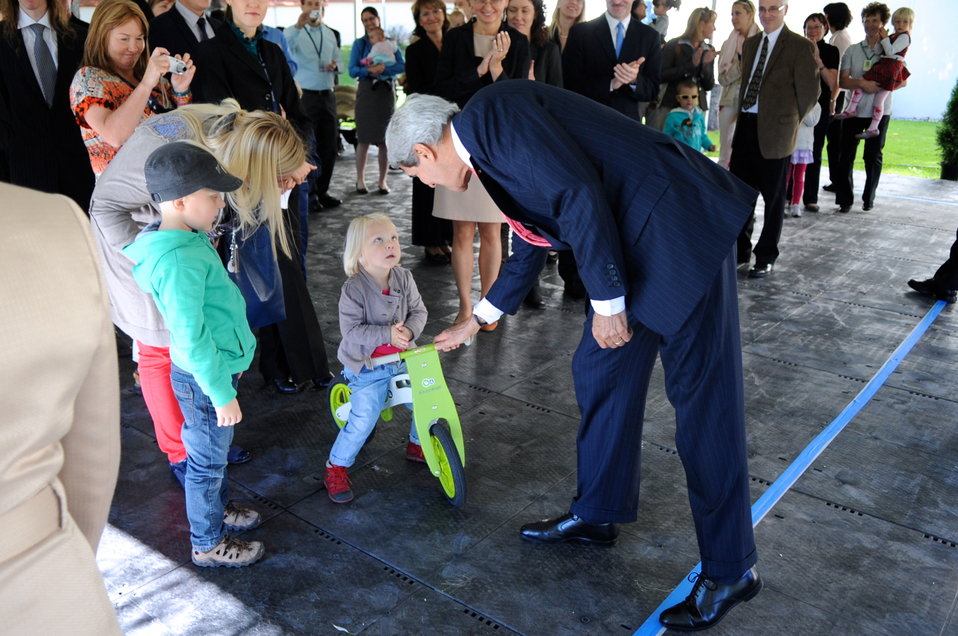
Secretary Kerry Greets Child of Embassy Vilnius Staffer

U.S. Secretary of State John Kerry greets the young child of a staffer before addressing workers at the U.S. Embassy in Vilnius, Lithuania on September 7, 2013.